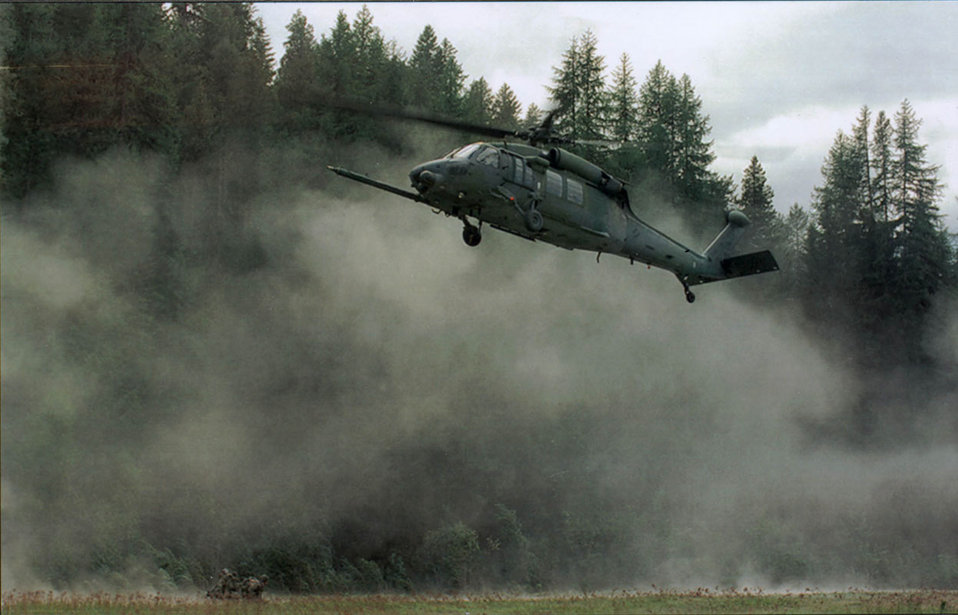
Pave Hawk

FILE PHOTO -- The primary mission of the HH-60G Pave Hawk helicopter is to conduct day or night operations into hostile environments to recover downed aircrew or other isolated personnel during war. Because of its versatility, the HH-60G is also tasked to perform military operations other than war. These tasks include civil search and rescue, emergency aeromedical evacuation, disaster relief, international aid, counterdrug activities and NASA space shuttle support.